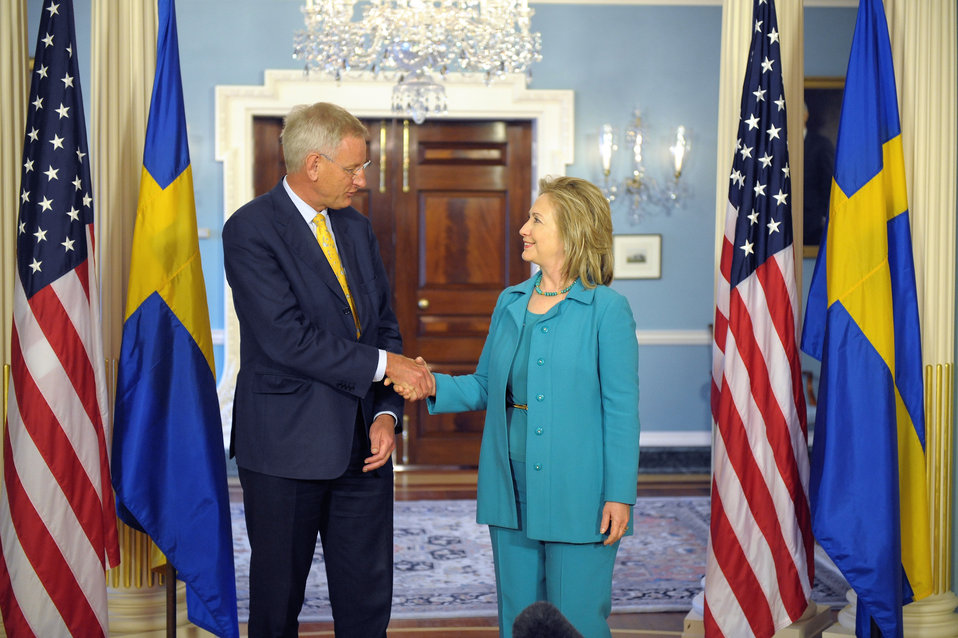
Secretary Clinton Shakes Hands With Swedish Foreign Minister Bildt

U.S. Secretary of State Hillary Rodham Clinton shakes hands with Swedish Foreign Minister Carl Bildt after their bilateral meeting, at the U.S. Department of State in Washington, D.C., on April 29, 2011.